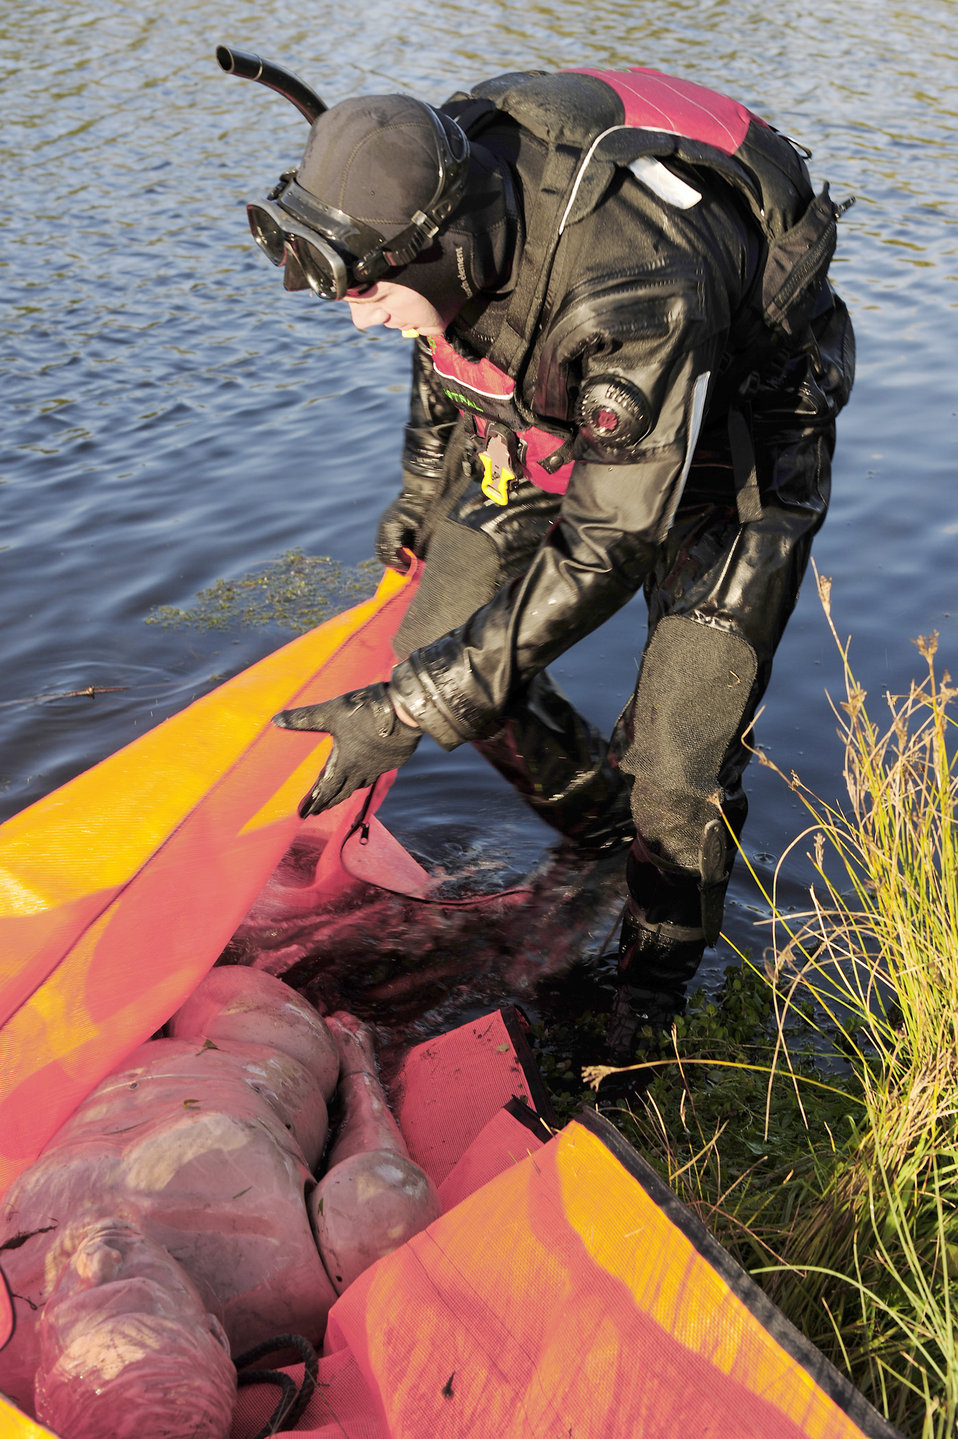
Subsurface recovery exercise

Staff Sgt. Brian French places a recovered mannequin into a body bag after a subsurface search and recovery exercise Oct. 20, 2010, at Stanford Training Area, England. The goal was to recover two bodies, three weapons and one box of sensitive material. Sergeant French is a pararescueman with the 56th Rescue Squadron.